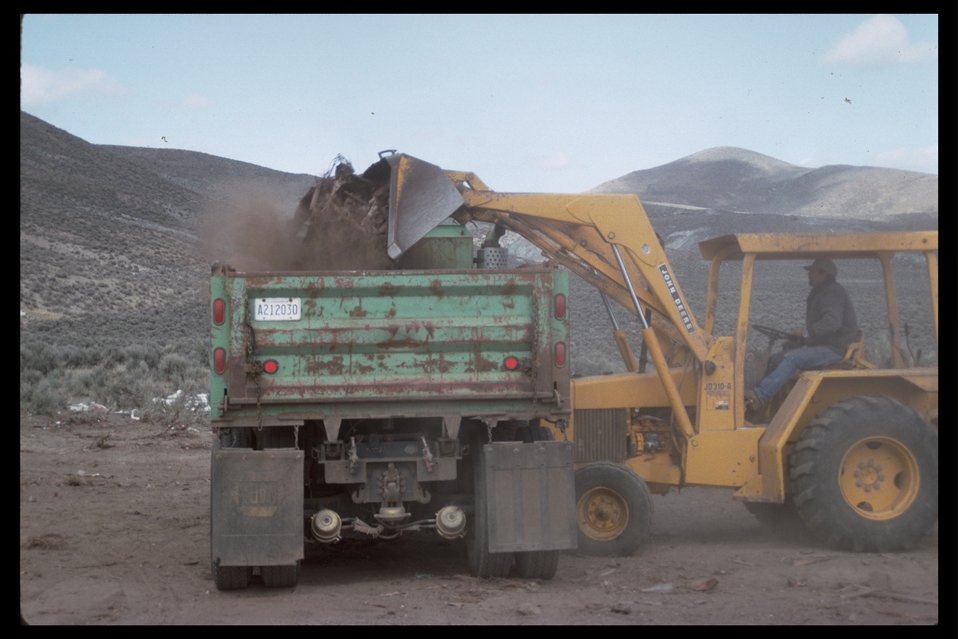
Illegal dumpsite clean-up in Pueblo Mountain WSA. Over 100 dump truck loads truck. (WSA 2-81)